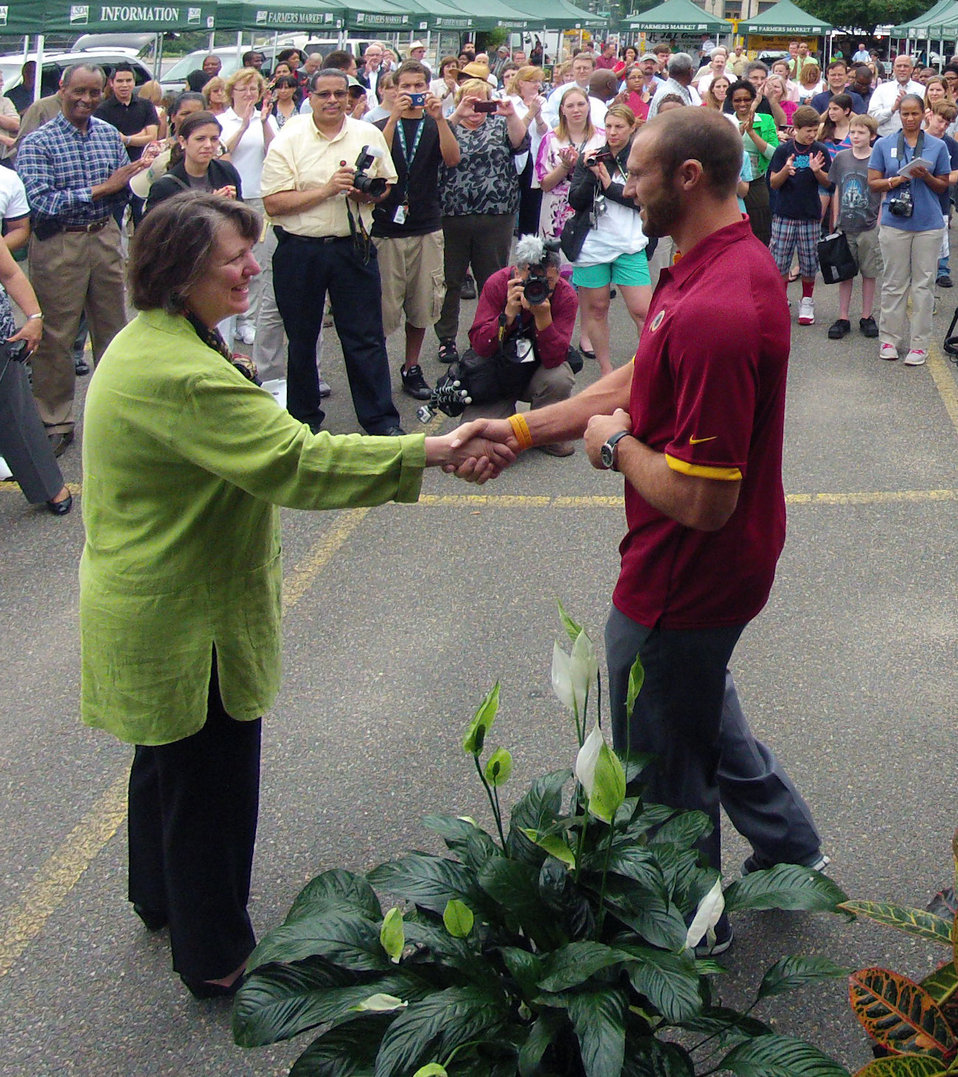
Agriculture Deputy Secretary Kathleen Merrigan shakes hands with Washington Redskins, #37, Reed Doherty who spoke about the importance of healthy eating and 60-minutes of physical activities each day, at the opening of the 17th season of the U.S. Department of Agriculture (USDA) summer farmers market at the USDA Whitten Building east parking lot in Washington, D.C., on Friday, May 31, 2012. This year's theme is Grow, Healthy, Eat Healthy and Be Healthy. USDA and Fuel Up to Play 60, in partnership with the National Dairy Council and the National Football League, invited employees, visitors and local school children to participate in opening day activities. New features for 2012 include an on-site sign language interpreter, a hand washing station, and a USDA-certified organic vendor. Other products sold today are fresh fruits, vegetables, herbs, baked goods, meats, kettle popcorn, local honey, hand-made soap and more.